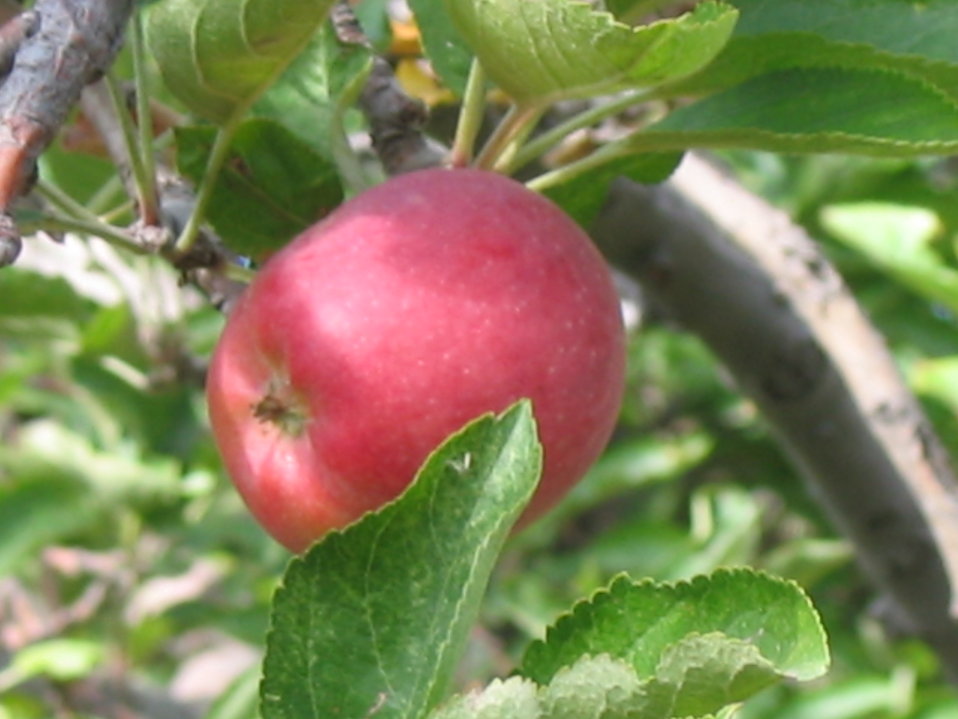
Orchard